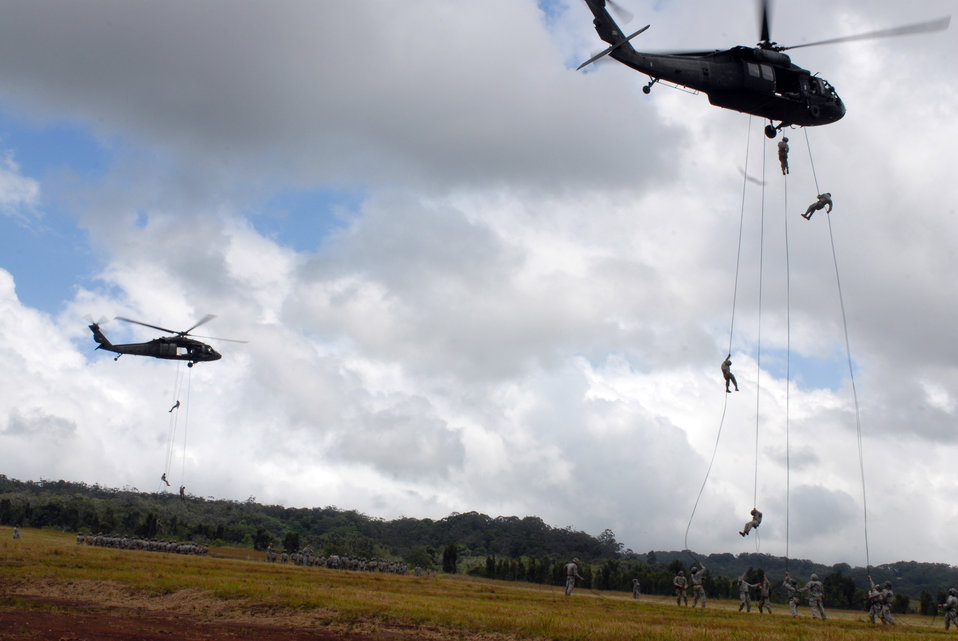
Airmen graduate Air Assault Course with Soldiers

Airmen and Soldiers rappel out of a UH-60 Blackhawk May 10, 2011, in Wahiawa, Hawaii. Five 647th Security Forces Squadron Airmen were chosen to participate with 309 Soldiers in an 11-day Army Air Assault course April 30 to May 11, 2011.